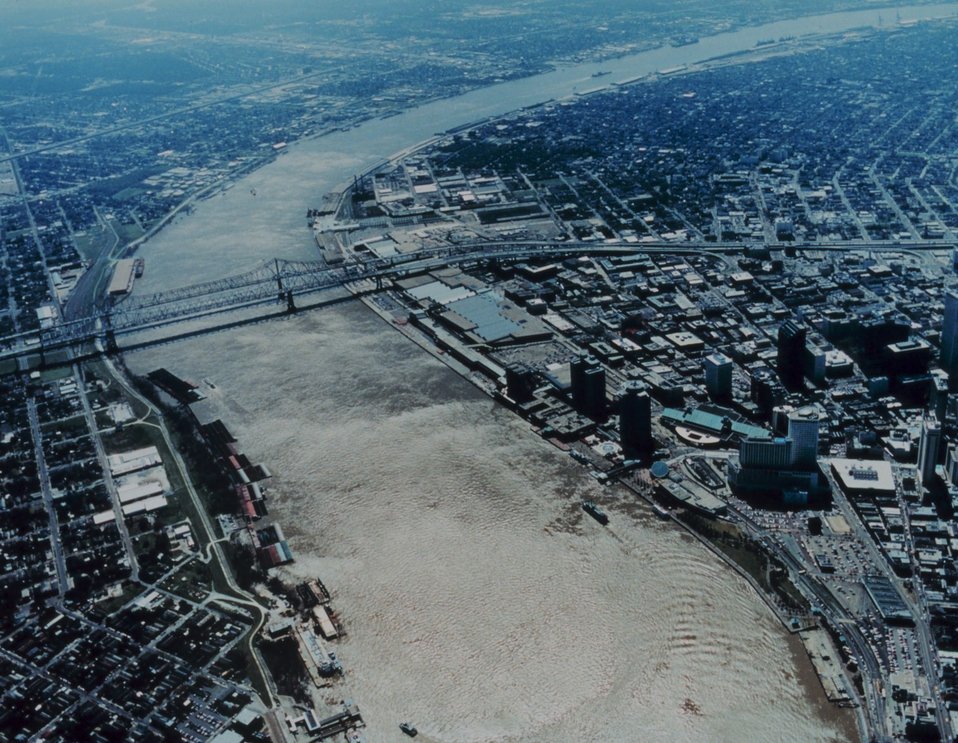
2957 North Latitude 9005 West Longitude.